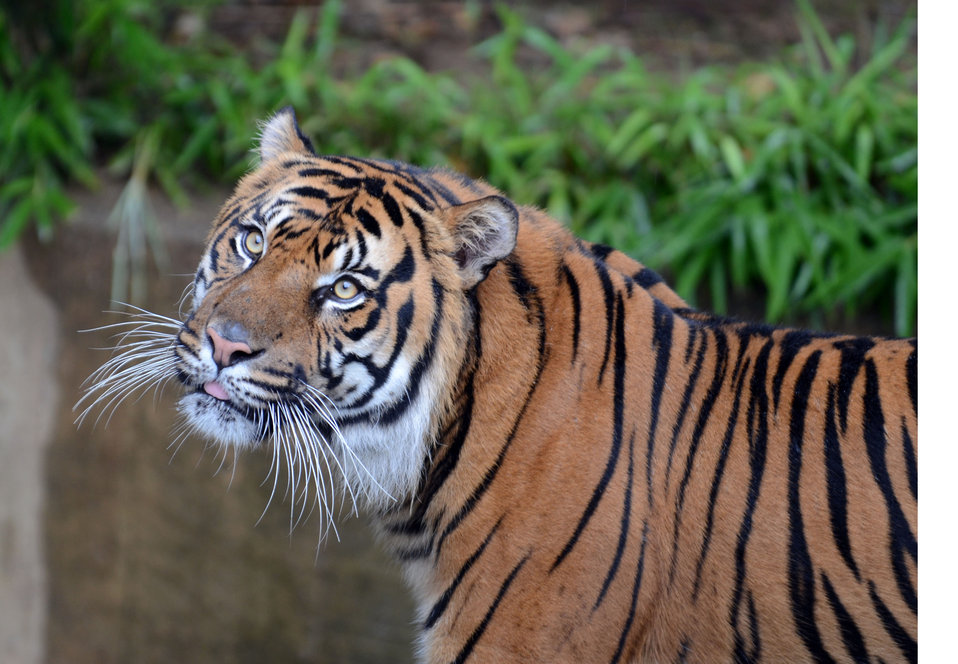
Save Vanishing Species Stamp First Day of Issue